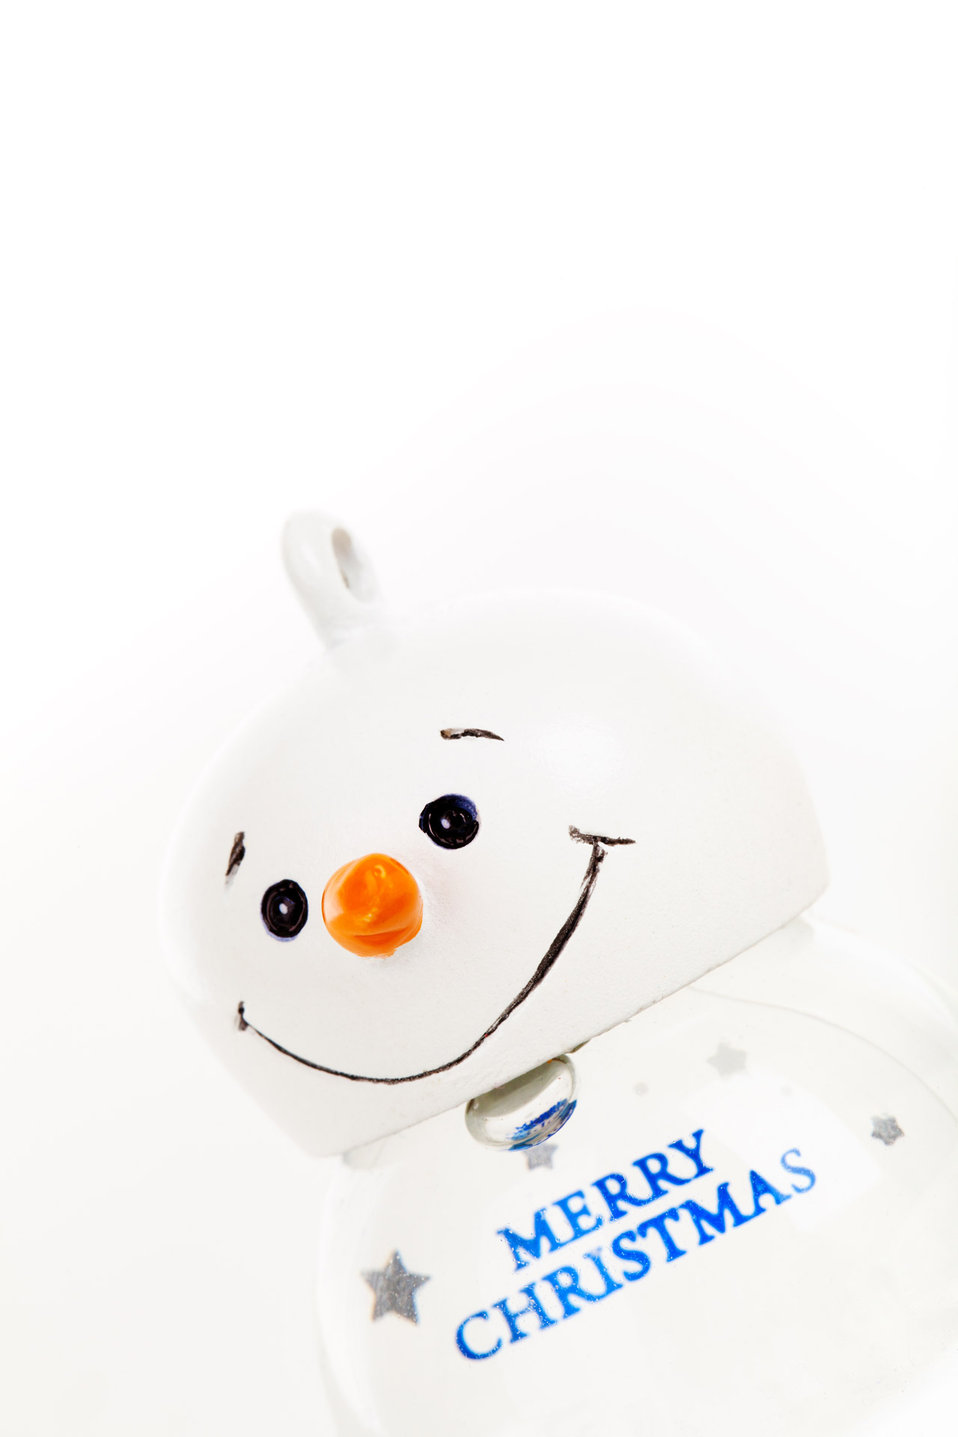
White snowman christmas ornament.